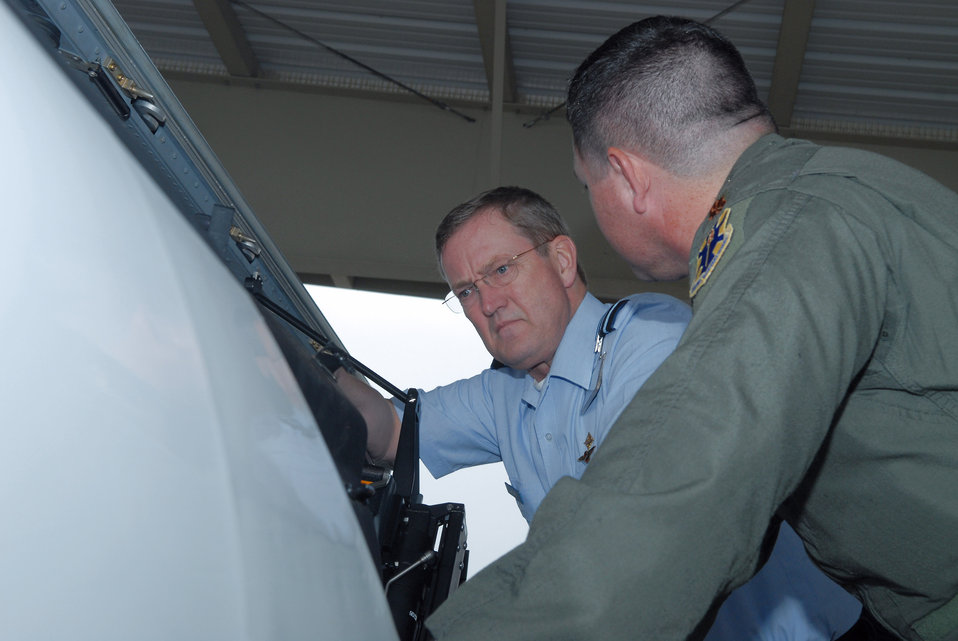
Dutch air chief predicts continued cooperation

Maj. Jarrett Edge shows Lt. Gen. Hans de Jong the cockpit of a T-6A Texan II aircraft during the general's visit to Randolph Air Force Base, Texas, March 10. General Jong is the Royal Netherlands air force commander. Major Edge is from the 559th Flying Training Squadron at Randolph AFB.